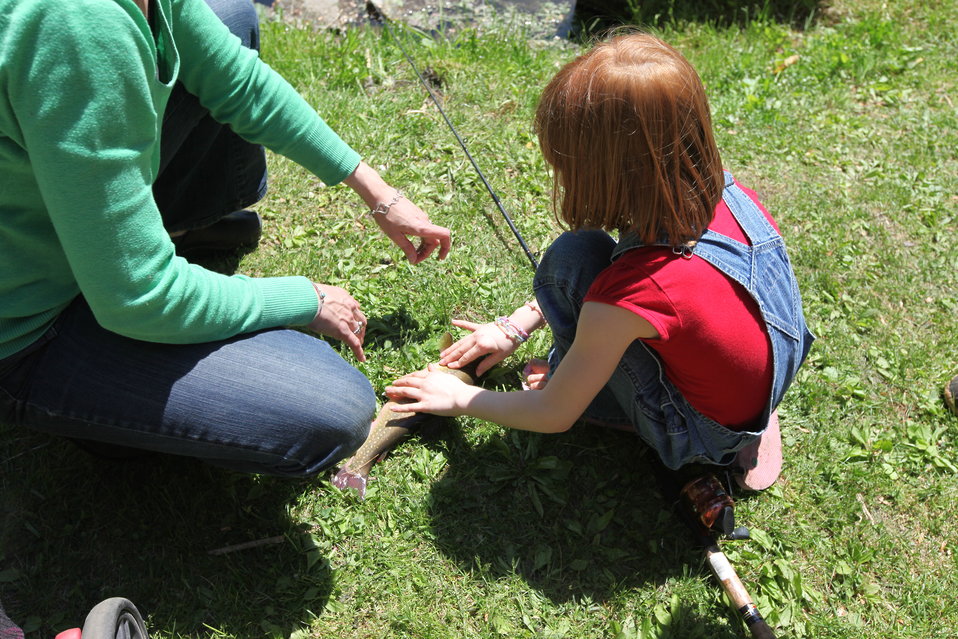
Youth Fishing Derby 2012

Megan Nagel/USFWS